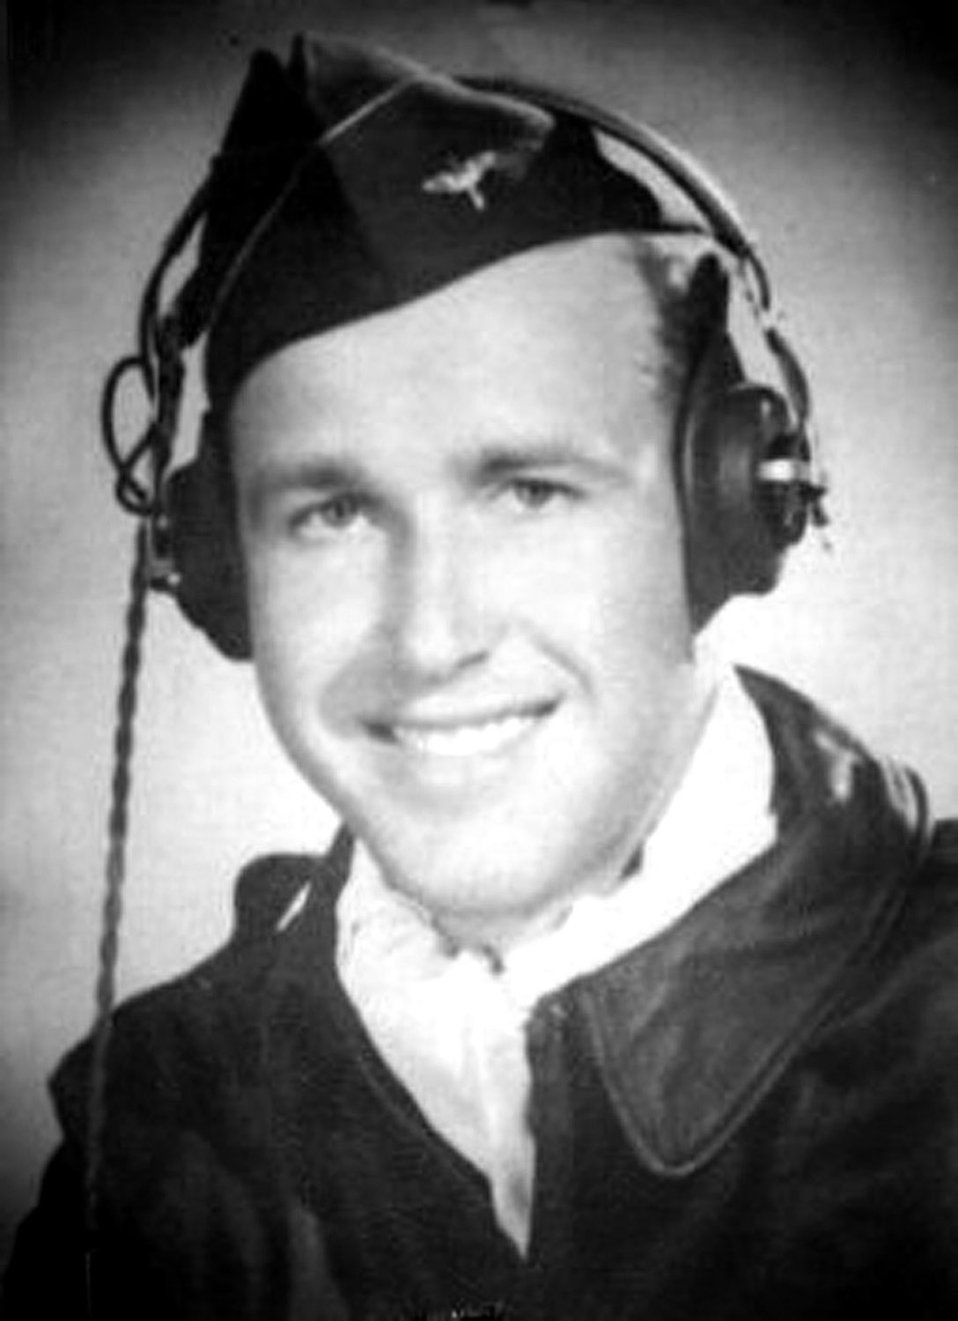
Pilot's survivors thankful for determined historian

2nd Lt. Harold E. Hoskin, shown in a 1943 photo, was buried in a ceremony Sept. 7 at Arlington National Cemetery in Virginia. Lieutenant Hoskin was one of five men who were flying in a B-24 Liberator that crashed while on a test flight Dec. 21, 1943, out of Ladd Field in Fairbanks, Alaska. Lieutenant Hoskin's remains were discovered in August 2006 and identified in April 2007.